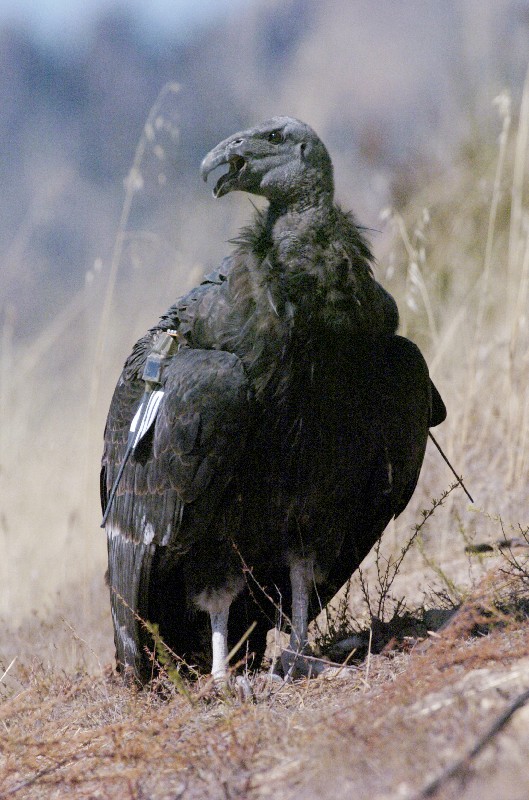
California condor orphan